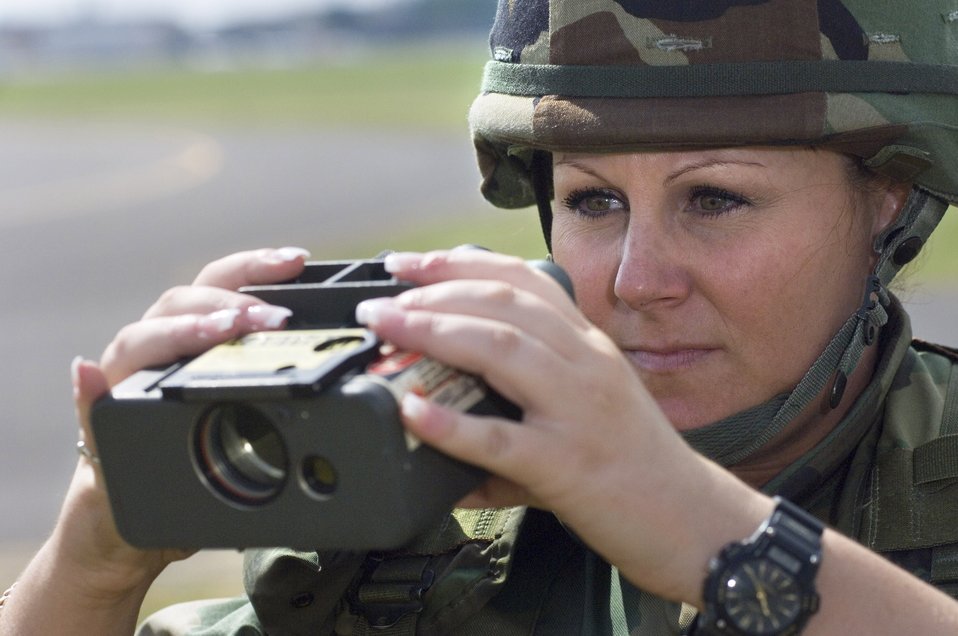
Air Force provides Army's weather support

Tech. Sgt. Gina Faulds prepares to measure the line of visibility during field training at Wiesbaden Army Airfield, Germany, June 21. Sergeant Faulds, of Chino, Calif., is a battle weather forecaster and the NCO in charge of the 7th Weather Squadron's Detachment 6.